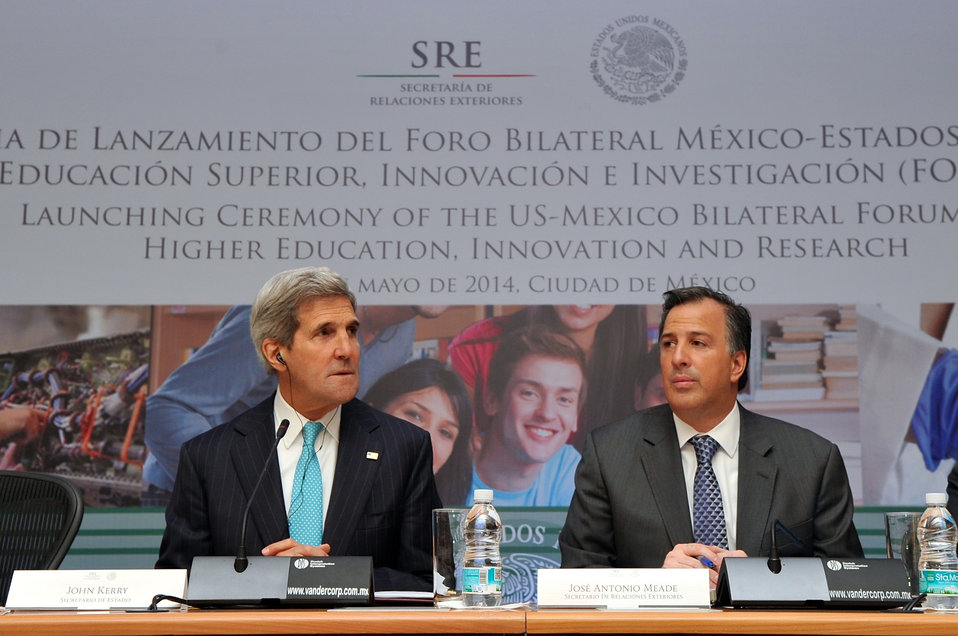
Secretary Kerry, Mexican Foreign Secretary Meade Hold Education Forum in Mexico City

U.S. Secretary of State John Kerry and Mexican Foreign Secretary José Antonio Meade participate in joint bilateral forum on Higher Education, Innovation, and Research, in Mexico City, Mexico, on May 21, 2014.